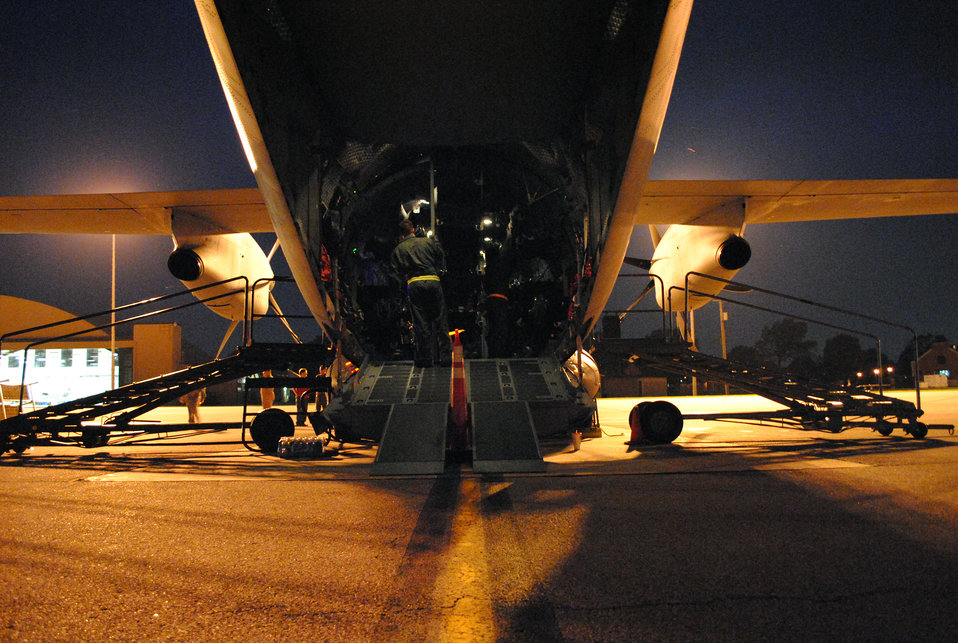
Scott agencies join to test new airframe

A C-27J Spartan sits on the flightline filled with mock patients and aeromedical evacuation personnel during a production qualification test June 8, 2010, at Scott Air Force Base, Ill. The timed emergency evacuations of patients and aircrew through all doors and an emergency escape hatch on top of the airframe.